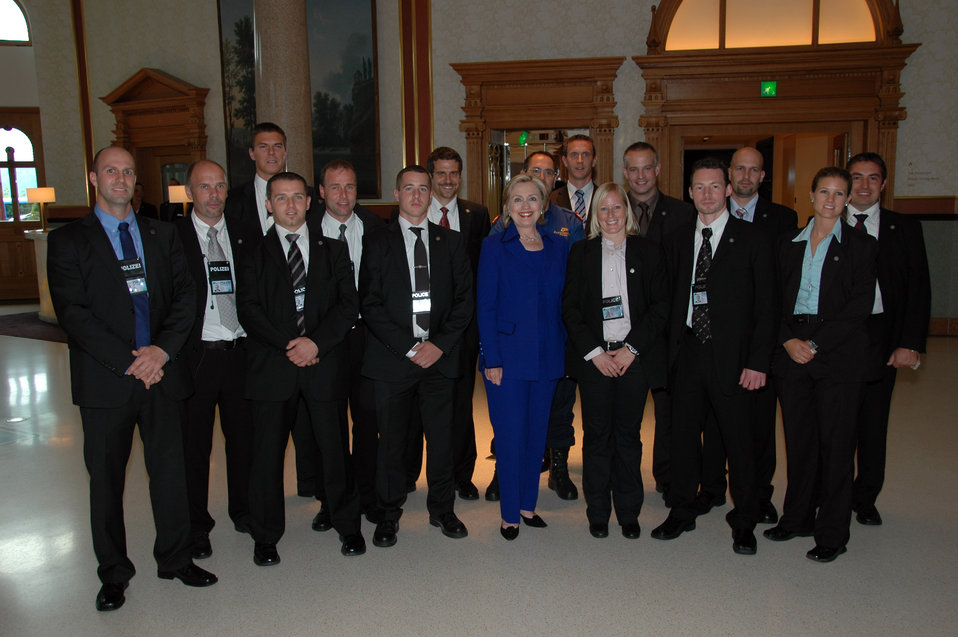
Secretary Clinton With Zurich Police

U.S. Secretary of State Hillary Rodham Clinton poses for a photo with Swiss Police in Zurich, Switzerland October 9, 2009.